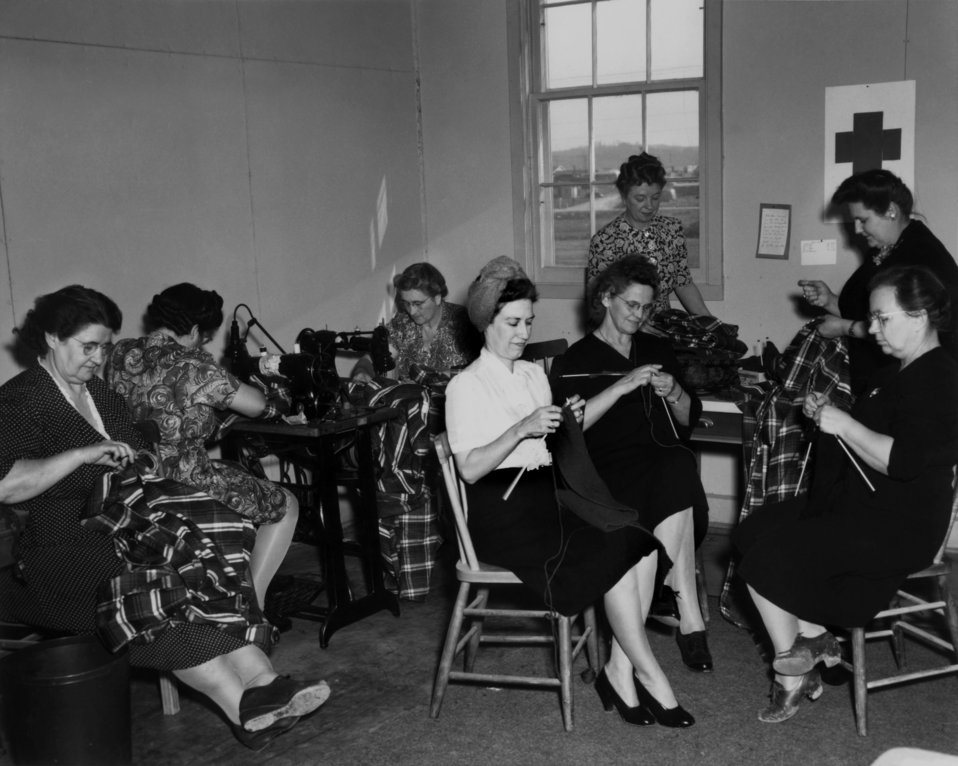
Red Cross Swing and Knitting, Midtown Recreation Center Oak Ridge

pro 346-1 DOE photo Ed Westcott 3/8/1945 Oak Ridge Tennessee
Red Cross Swing and Knitting, Midtown Recreation Center